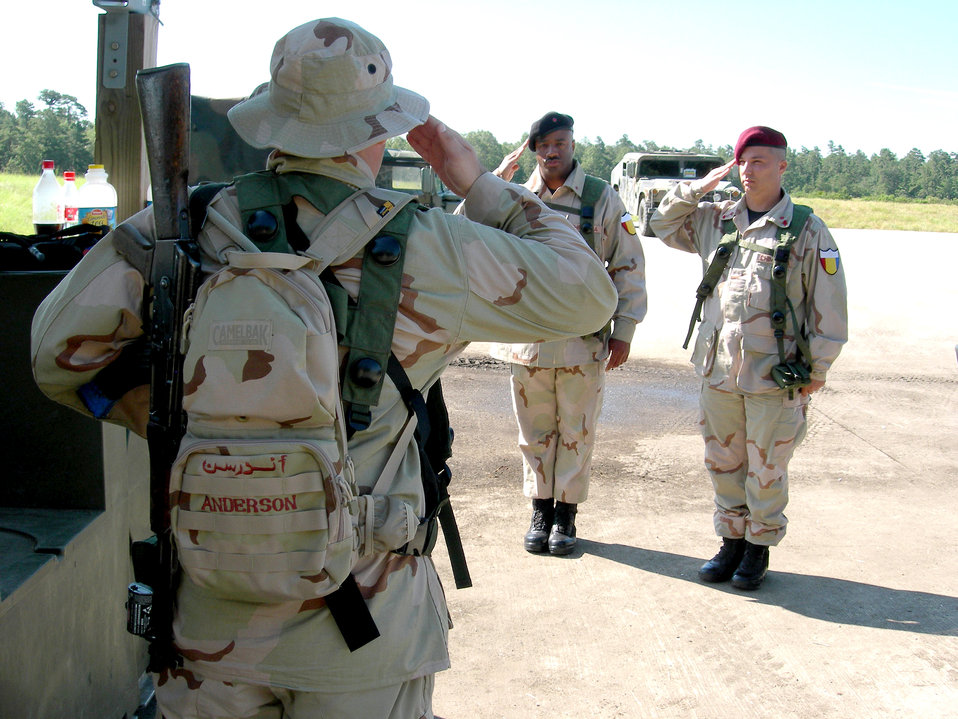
Airmen hone combat skills

Airmen serving as role players in a foreign national army salute each other during an Exercise Eagle Flag 06-3 scenario at Naval Air Engineering Station Lakehurst, N.J., on July 14. The exercise tests Airmen on their expeditionary combat support skills. Training is conducted by the Air Mobility Warfare Center's 421st Combat Training Squadron staff at Fort Dix, N.J.